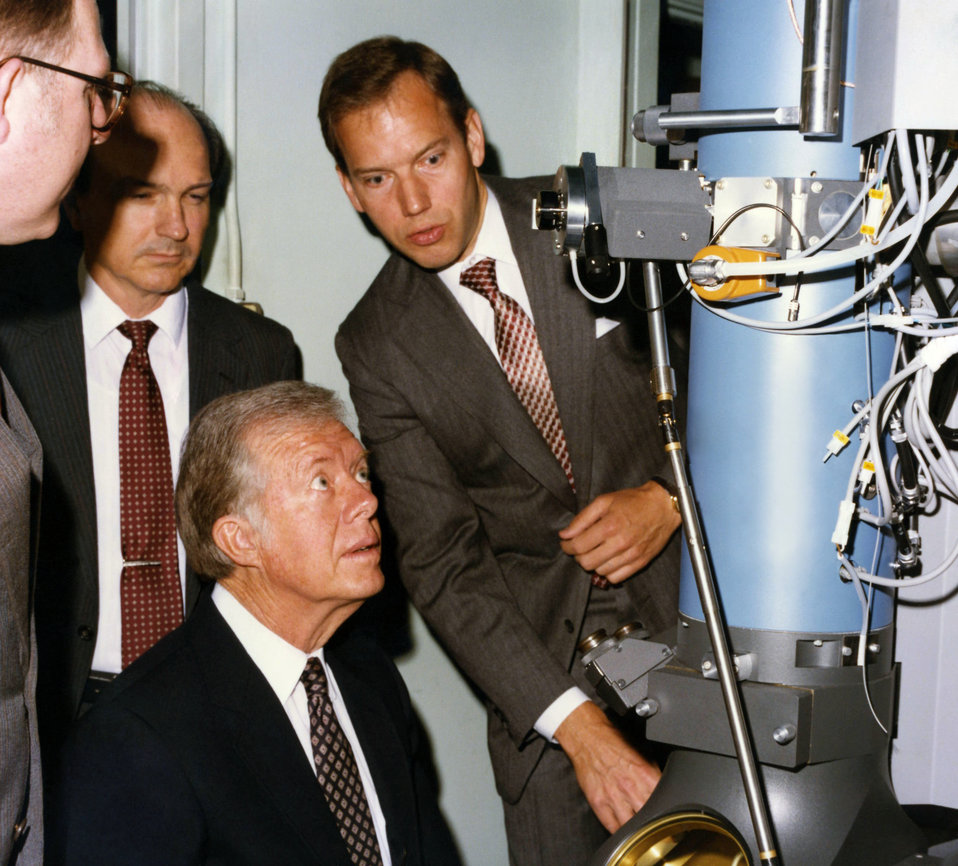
This photograph showed former U.S. President Jimmy Carter (1977-1981) as he was seated in front of an electron microscope during his 1985 visit to the Centers for Disease Control and Prevention (CDC). Also shown in the background are (left to right) former CDC Deputy Director, Dr. Walter Dowdle and retired CDC Pathologist, Dr. Edwin P. Ewing, who was also one of the founding fathers of the Public Health Image Library (PHIL).